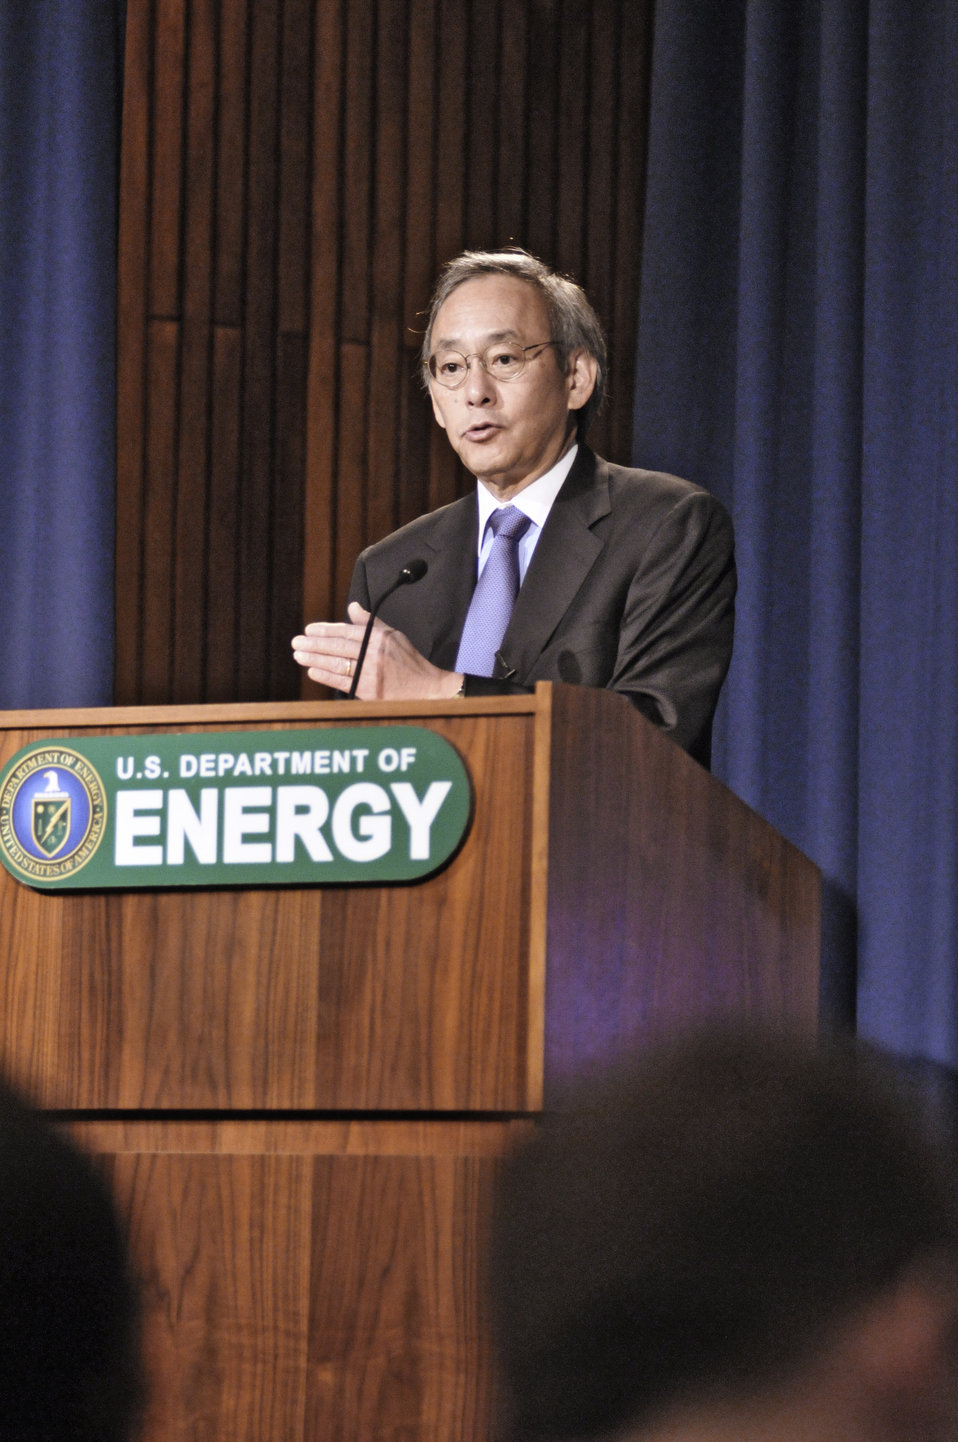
Energy Secretary Steven Chu gives remarks at the unveiling of the Quadrennial Technology Review.